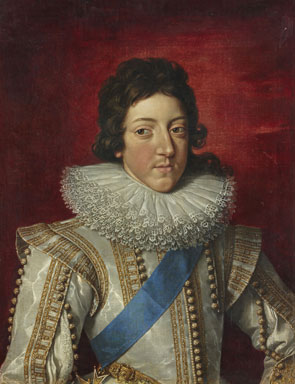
'Louis XIII, King of France, with the Sash and Badge of the Order of Saint Esprit' by Frans Pourbus the Younger